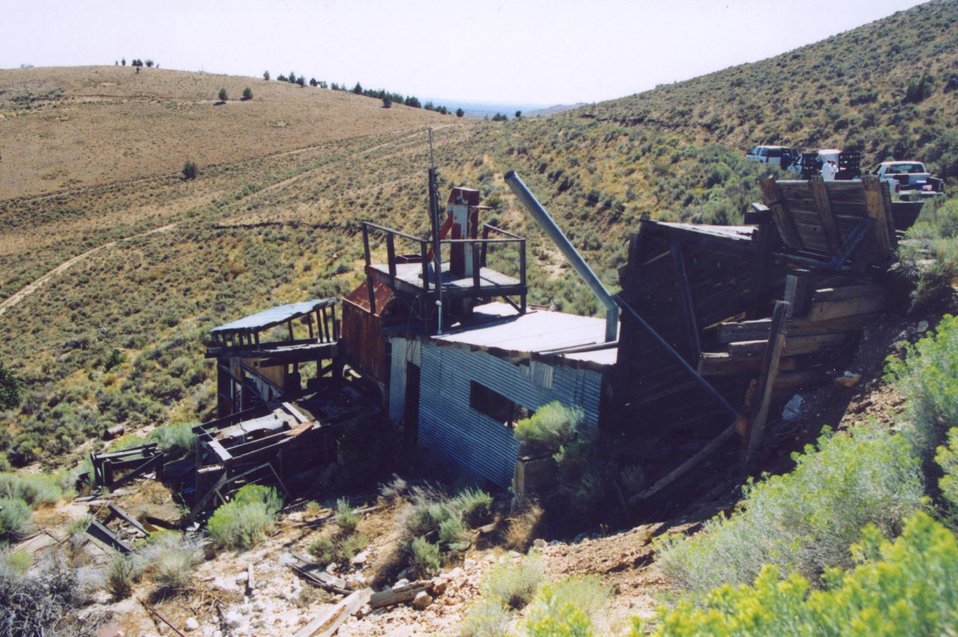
Glass Butte 4 Abandoned Mine Lands just before hazmat clean up. 8/22/02 Photo by Mark Armstrong